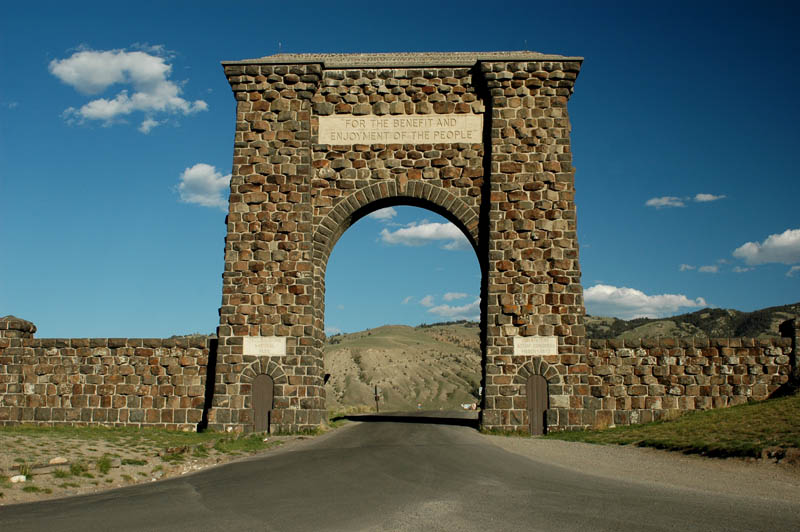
The Roosevelt Arch is located in Montana at the North Entrance of Yellowstone National Park. The arch's cornerstone was laid by Theodore Roosevelt. The placard reads 'For the Benefit and Enjoyment of the People.'